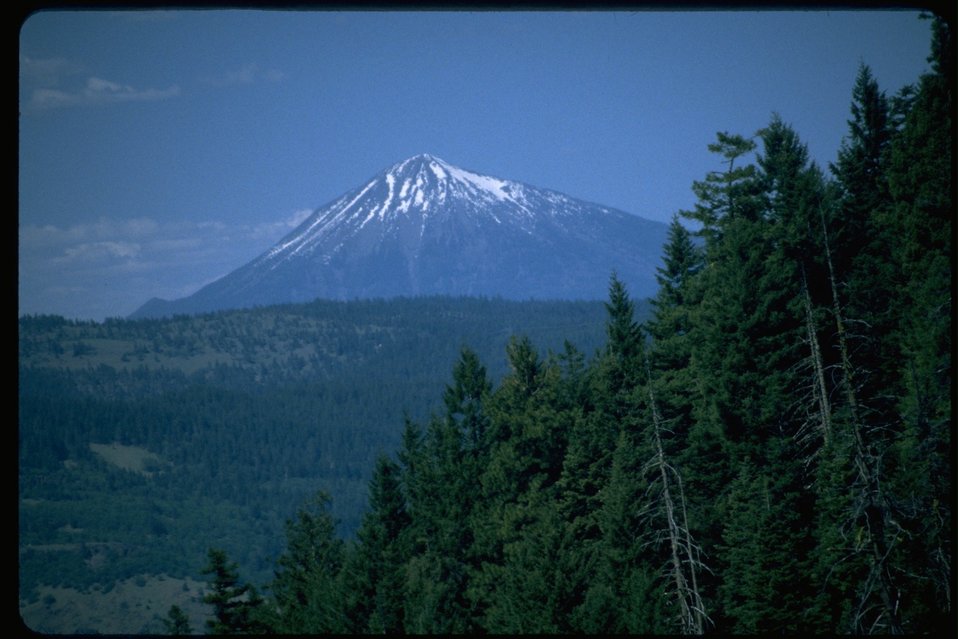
Telephoto shot of Mt. McLoughlin from Cascade-Siskiyou National Monument (CSNM).